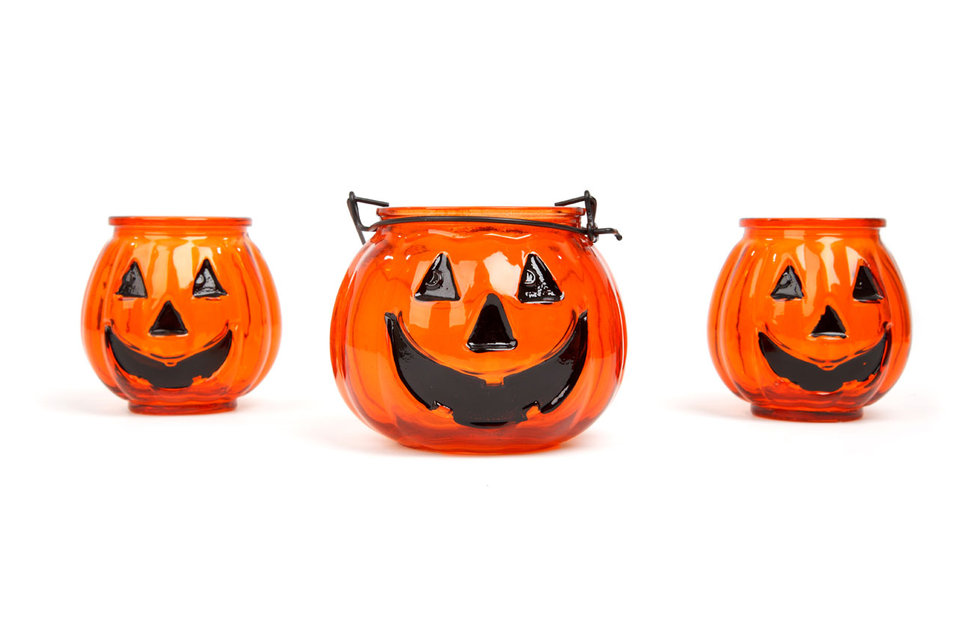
Halloween candle holder

Three jack-o-lantern halloween candle holders isolated on white background.